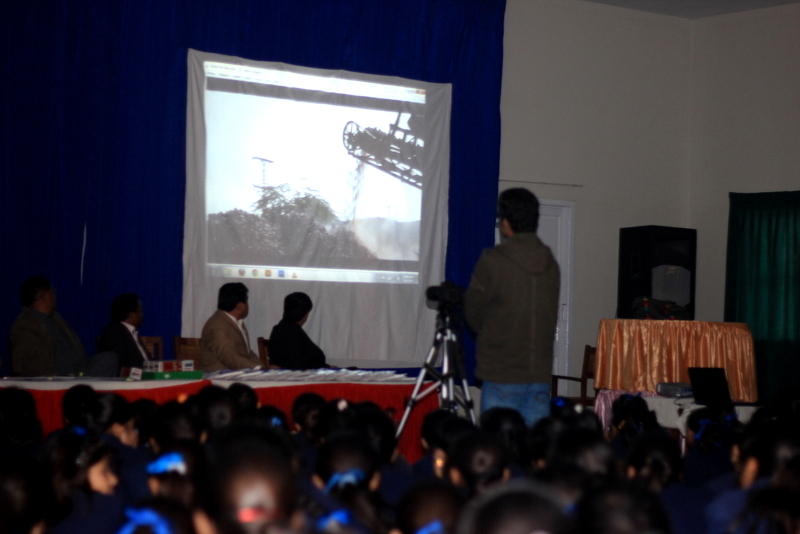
USAID Power Distribution Program-Energy Conservation Seminar at Multan Public School and Colleges for Girls, Multan.

For the better know how of the students regarding MEPCO & energy sector of Pakistan, a documentary was played during the seminar.